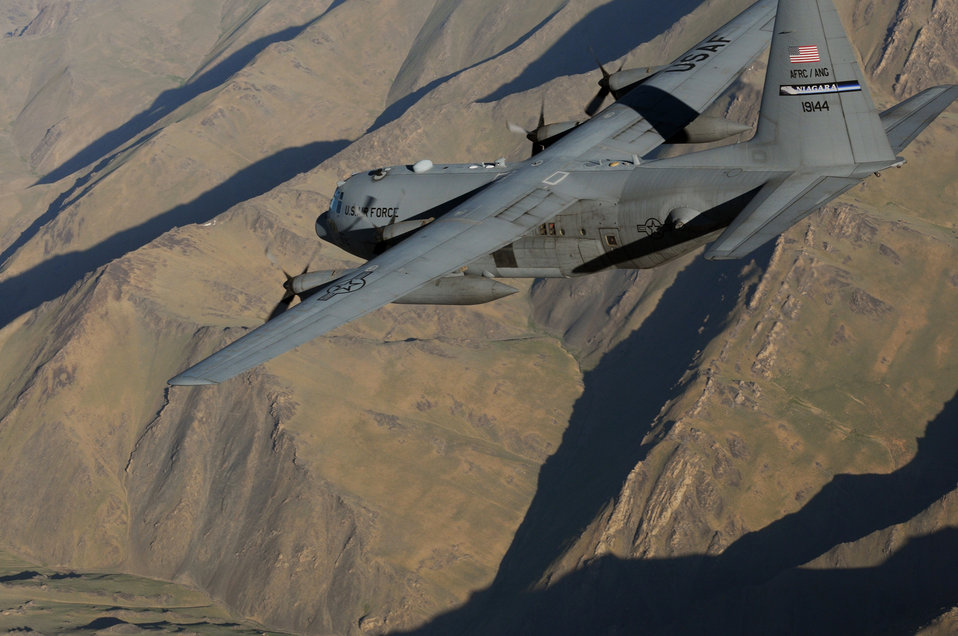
Mission over Afghanistan

A C-130 Hercules aircrew from the New York Air National Guard’s 107th Airlift Wing flies over mountainous Afghan terrain June 22, 2011, on the way to delivering much-needed supplies to a forward operating base in Oruzgan Province.